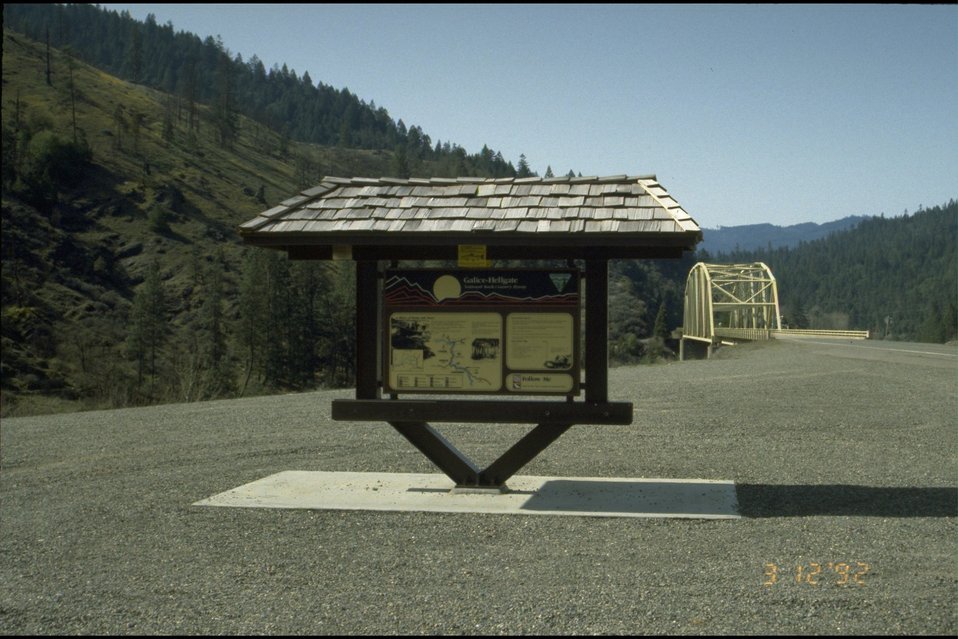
Rogue River - Hellgate Bridge. Galia - Hellgate Back Country Byway Kiosk.